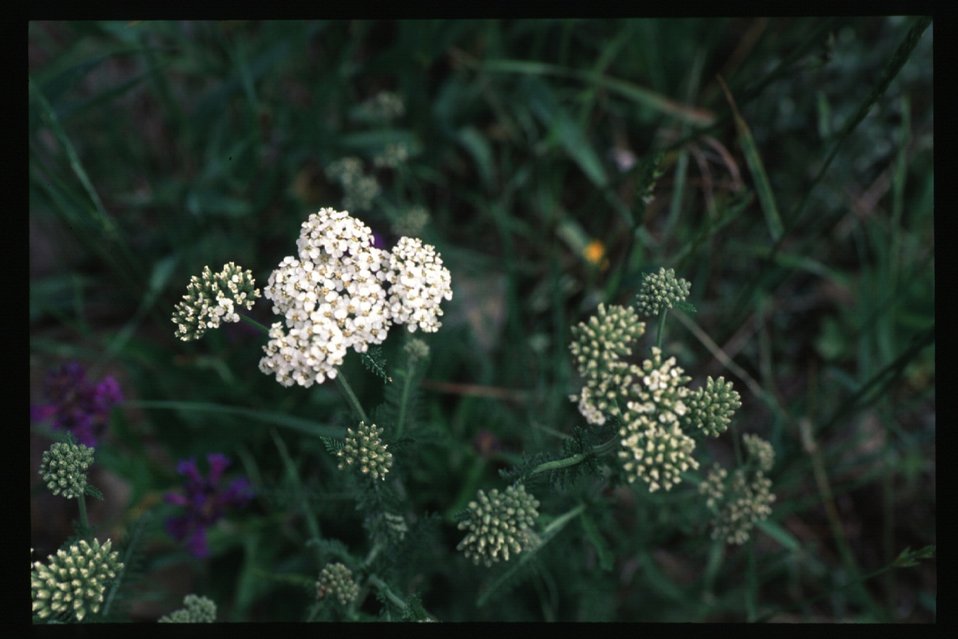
Recreation Scenic Biker Shoshone Field Office USRD Upper Snake River District Bald Mountain Trail Wildflowers